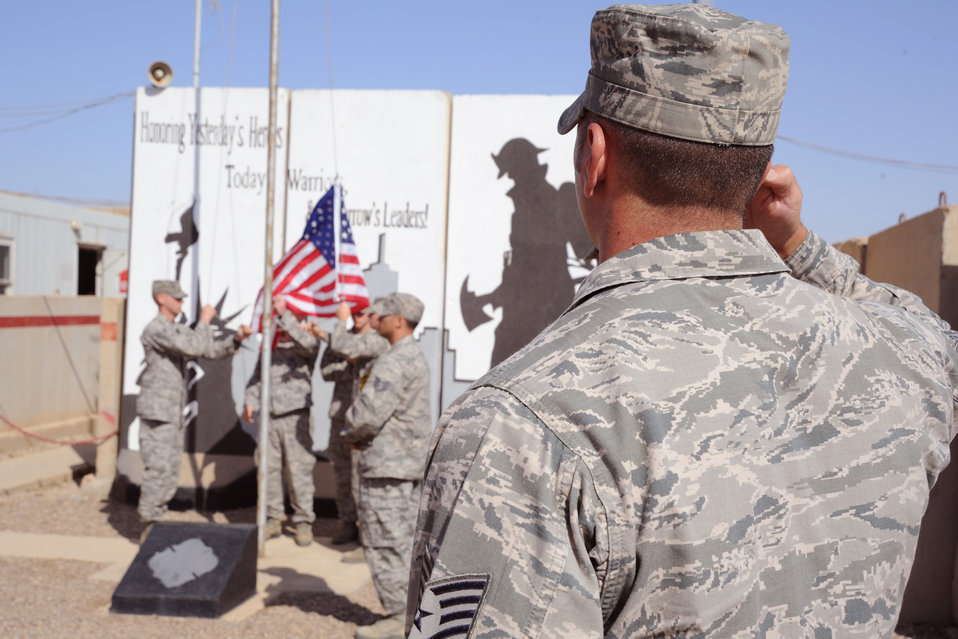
Firefighters retire memorial plaque

Tech. Sgt. Anthony Bocek, a 332nd Expeditionary Civil Engineer Squadron firefighter, salutes as the honor guard lowers the flag in honor of the retirement of Staff Sgt. Ray Rangel's memorial April 6, 2011, at Joint Base Balad, Iraq. The former 332nd ECES firefighter was killed in action in 2006.